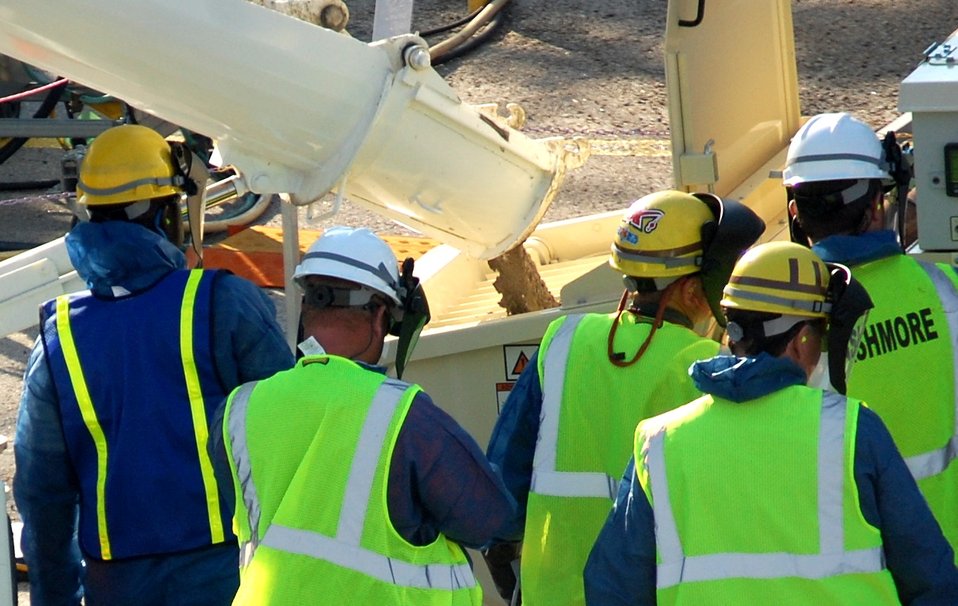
Risk reduction at SRS

On April 2, 2012, Savannah River Remediation (SRR), LLC, workers began the operational closure of two hazardous waste tanks at the U.S. Department of Energy (DOE) Savannah River Site (SRS), signifying the most substantial environmental risk reduction in South Carolina since 1997. In this photo, a specially formulated grout was poured into a hopper and transferred through lines to Tank 19, the next SRS underground hazardous waste tank that will be grouted. Grouting operations began April 2 and will continue through the summer. Tank 19 and Tank 18, which also will be grouted this summer, are 1.3-million-gallon tanks.